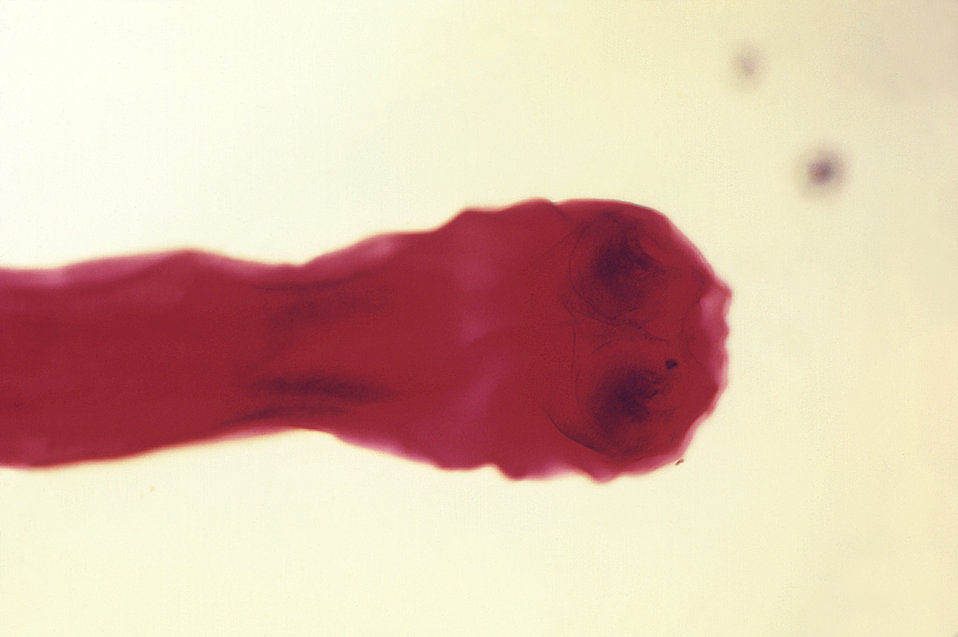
Under a low magnification, this photomicrograph depicted the 'scolex', or head region of the cestode, Taenia saginata tapeworm. It is with the suckers on its scolex that the tapeworm attaches itself to the small intestinal mucosa where it will reside.